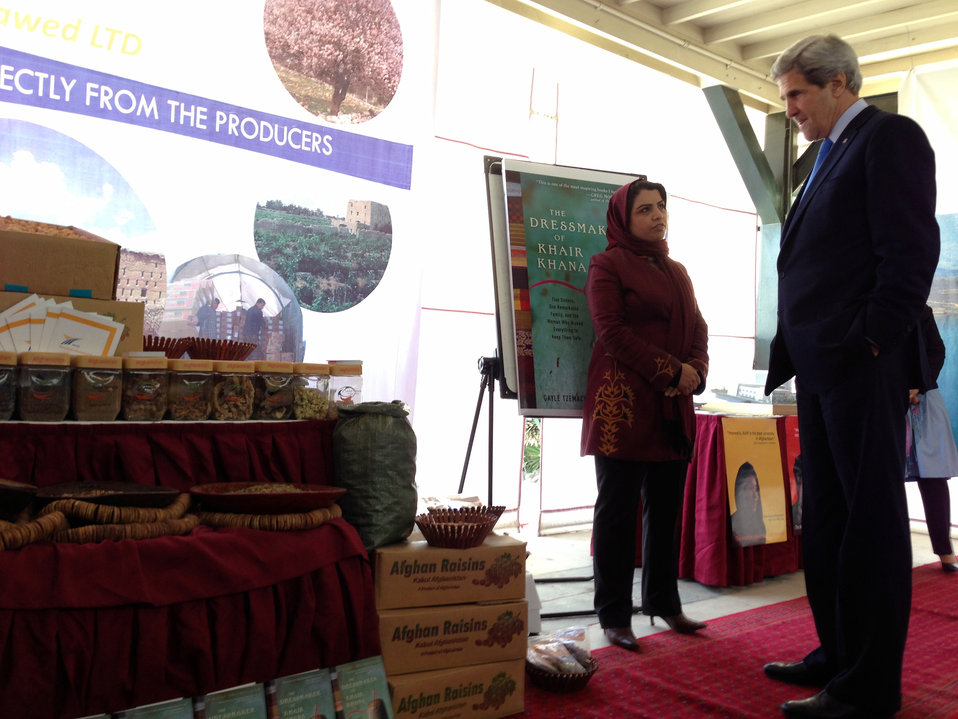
Secretary Kerry Tours Women’s Entrepreneurship Showcase in Kabul

U.S. Secretary of State John Kerry visits with Kamila Sidiqi, who runs a business consulting service and is profiled in Gayle Lemmon's bestseller 'The Dressmaker of Khair Khana,' during a tour of local businesses in Kabul, Afghanistan on March 26, 2013.